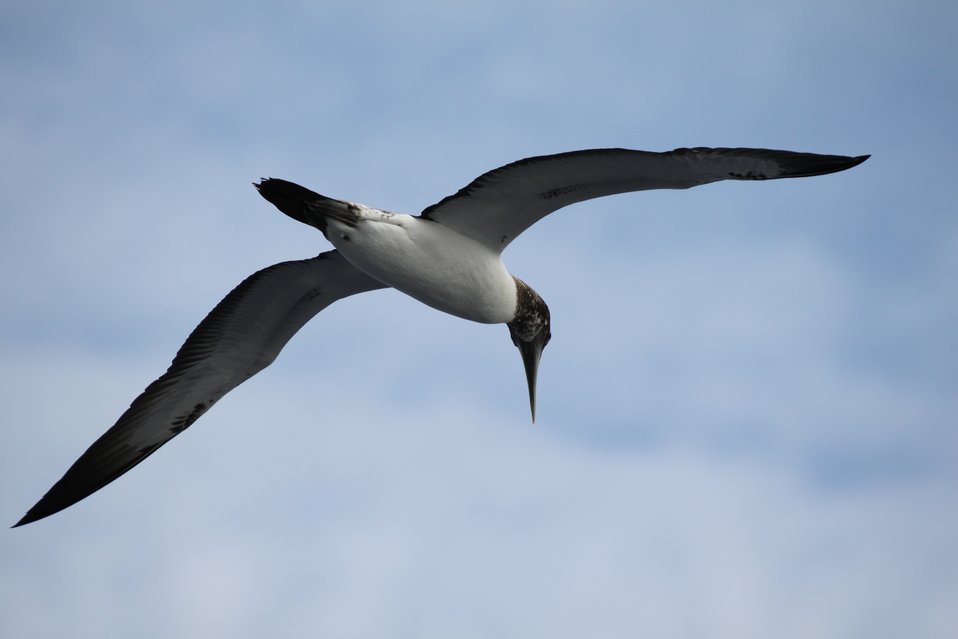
Juvenile masked booby in flight